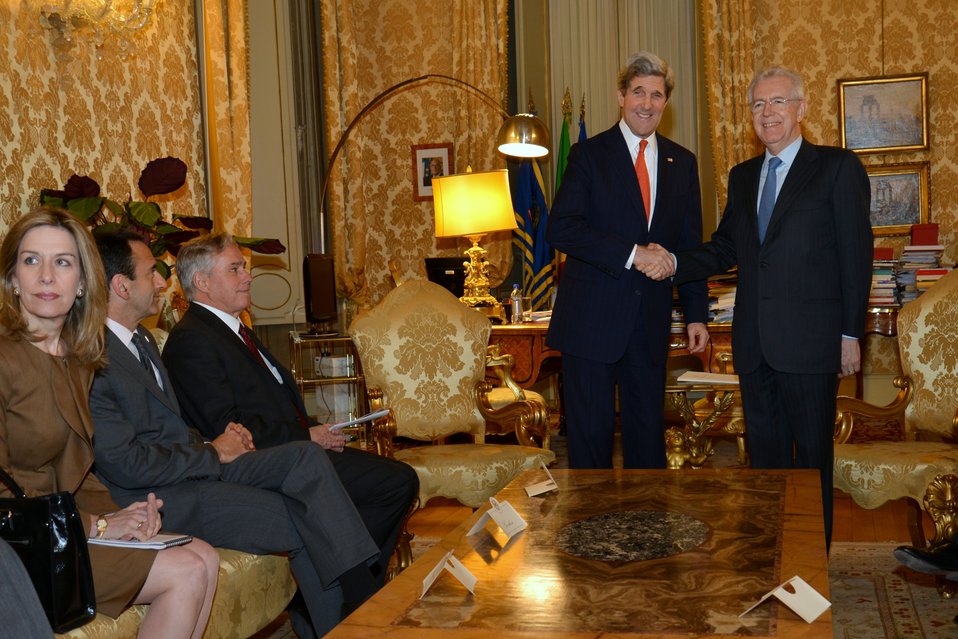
Secretary Kerry Meets With Italian Prime Minister Monti

U.S. Secretary of State John Kerry meets with Italian Prime Minister Mario Monti in Rome, Italy, on February 28, 2013.